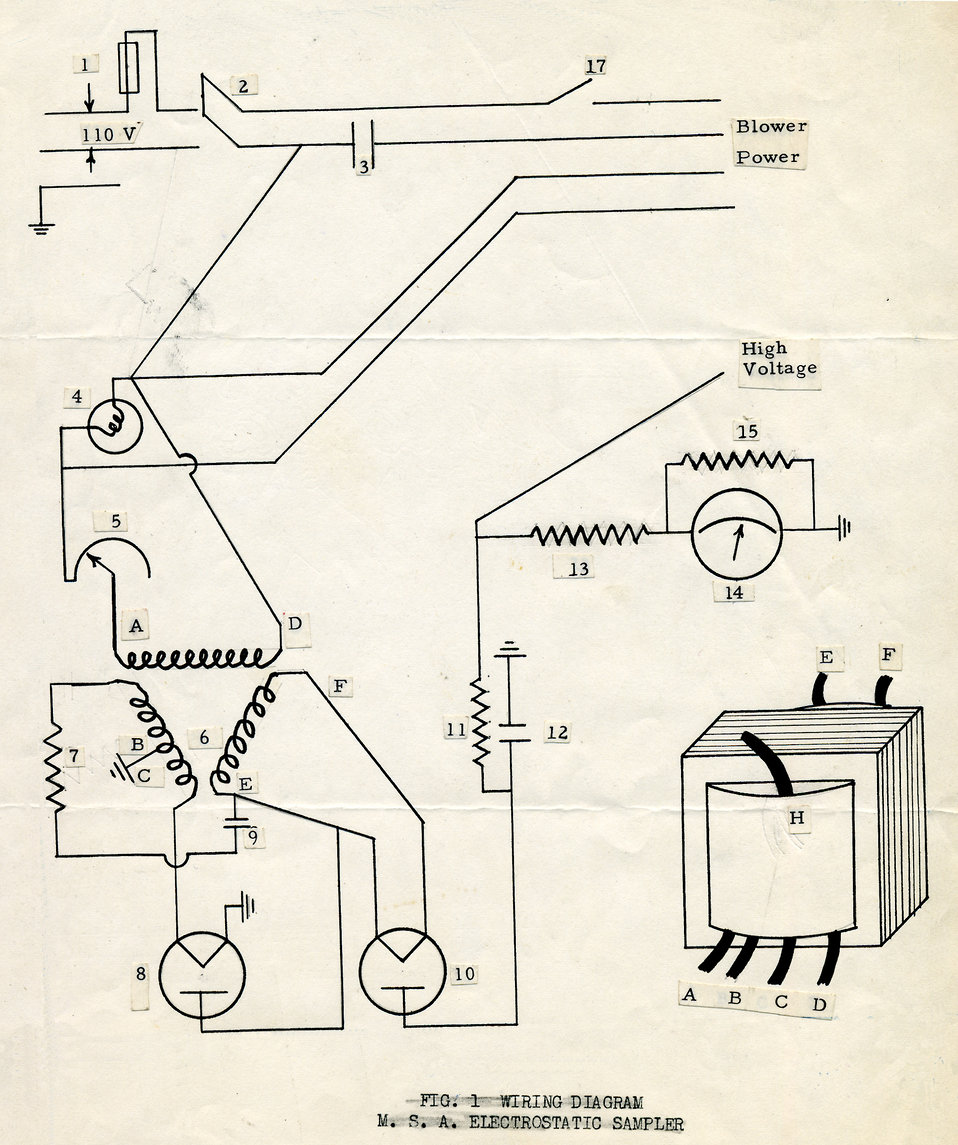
This 1952 drawing provided by the Center for Disease Control's (CDC), National Institute for Occupational Safety and Health (NIOSH), detailed the wiring design of a Mine Safety Appliances (M.S.A.) electrostatic air sampler. In the 1940s and 1950s, the Industrial Hygiene Division (IHD) investigated hazards associated with many types of manufacturing activities. This design was an example of a measure meant to improve workplace safety by keeping vapors from escaping.